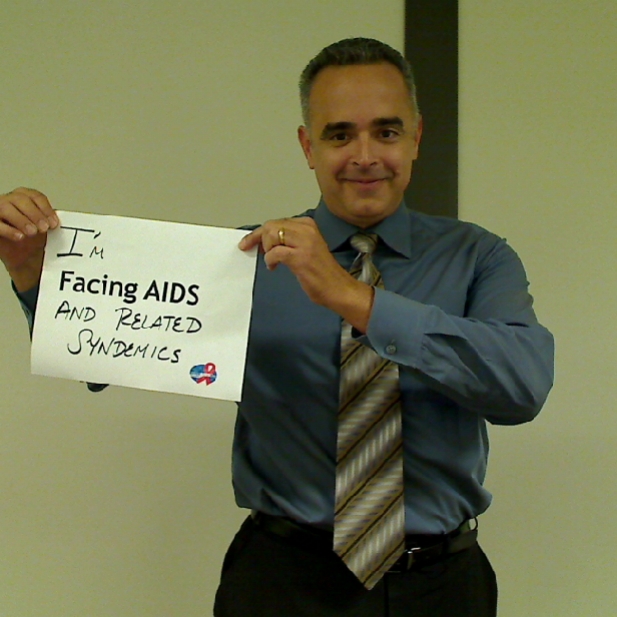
I'm Facing AIDS ANDS RELATED SYNDEMICS